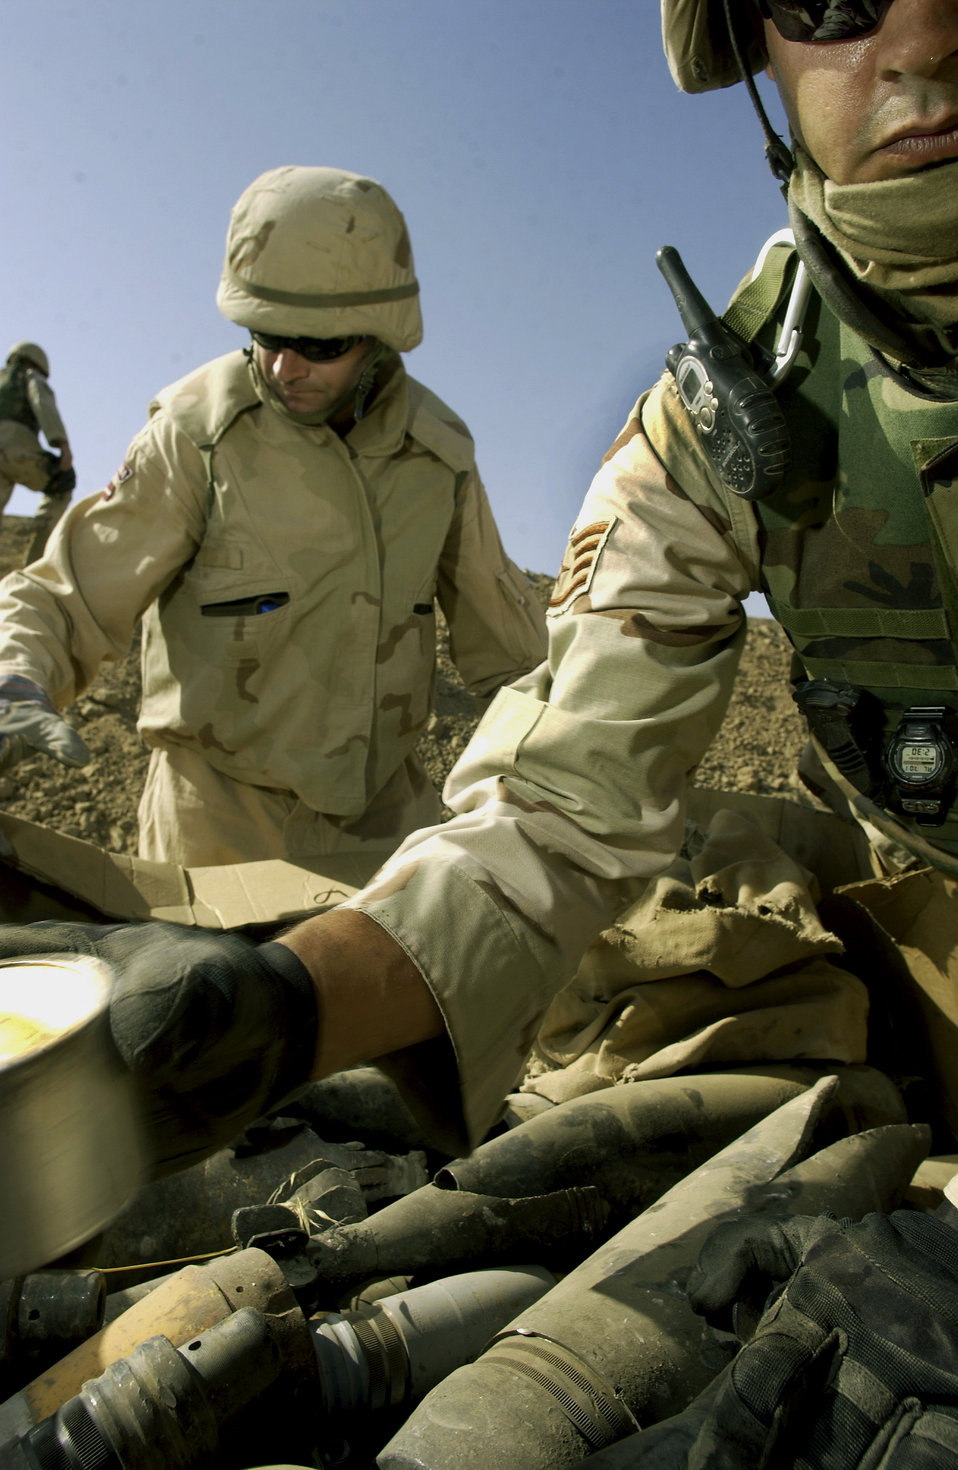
Disposing enemy ordnance

KIRKUK AIR BASE, Iraq -- Staff Sgt. Doug Baker (foreground) and Latvian navy Warrant Officer Guntars Jeromans prepare to destroy more than 180 120 mm mortar rounds. Baker and Jeromans are both assigned to the 506th Expeditionary Civil Engineer Squadron's explosive ordnance disposal flight here. EOD members regularly dispose of more than 10,000 pounds of ordnance twice a week.